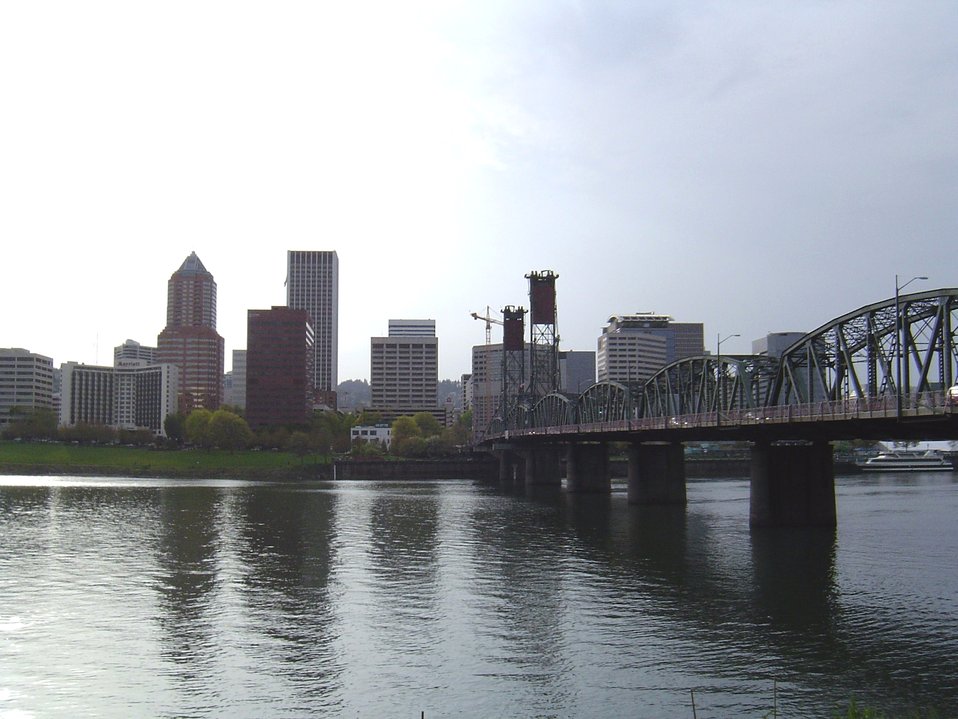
Downtown Portland.